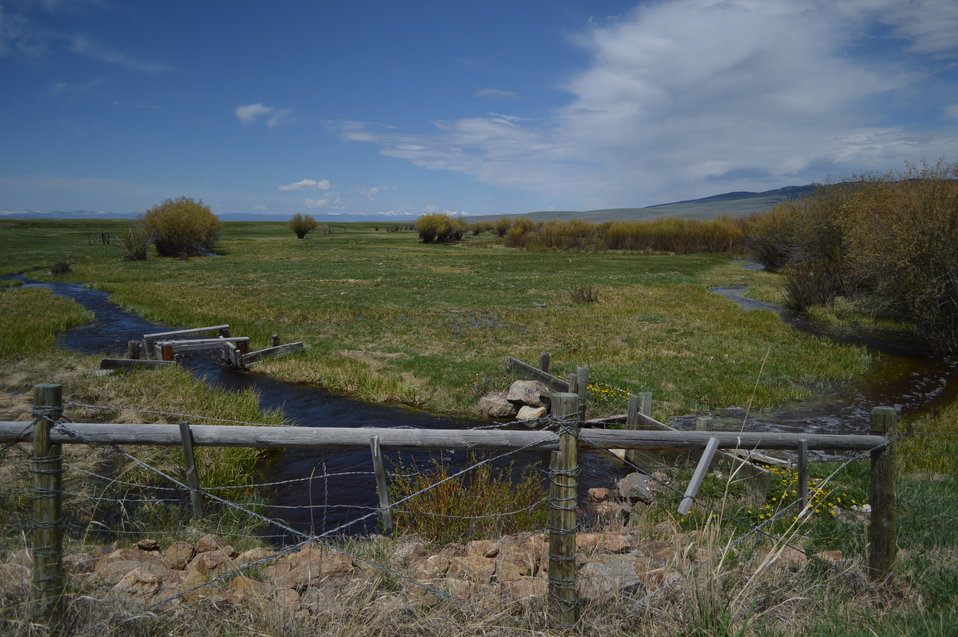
Regional Leadership Visit to Montana 2014